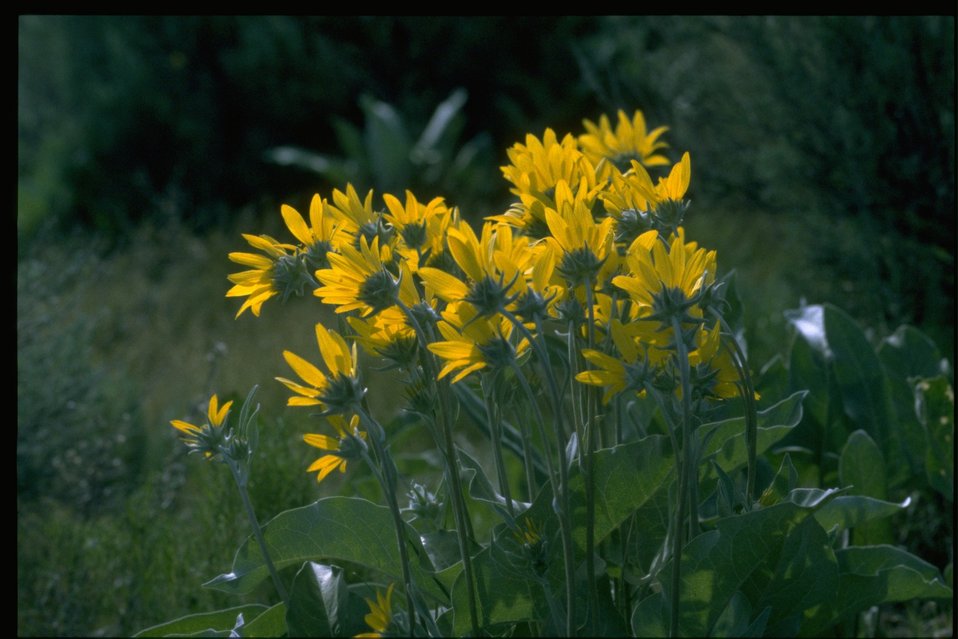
Medium shot of Arrowleaf Balsam Root (Balsamorhiza sagittata).